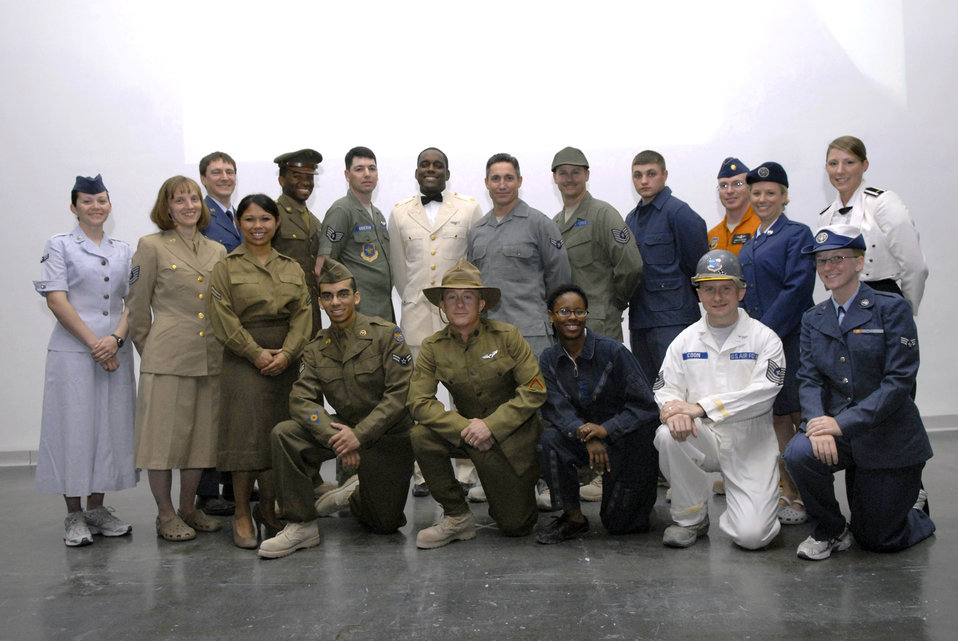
Operation Uniform Delta highlights heritage

Airmen pose for a group photo during Operation Uniform Delta April 27 at a base in Southwest Asia. Operation Uniform Delta was an event displaying the history of the Air Force uniform and the changes that it underwent through the years.